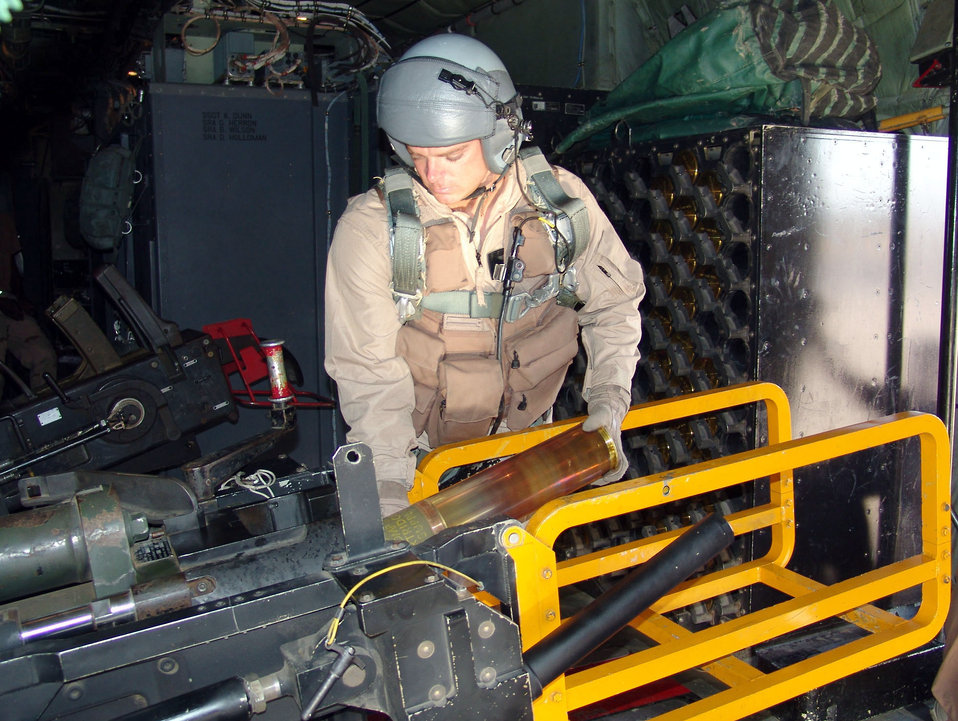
A spooky gunner

SOUTHWEST ASIA -- Tech. Sgt. Jim Jochum loads a round into a 105 mm cannon onboard an AC-130U Spooky Gunship. The aircraft is also armed with a 25 mm gun and 40 mm cannon. Its primary missions include close-air support for convoys, air interdiction of targets and force protection for base defense. Sergeant Jochum is an aerial gunner assigned to the Air Force Special Operations Detachment at a forward-deployed location and is deployed from Hurlburt Field, Fla. He completed his 150th combat mission on an AC-130U on July 6.